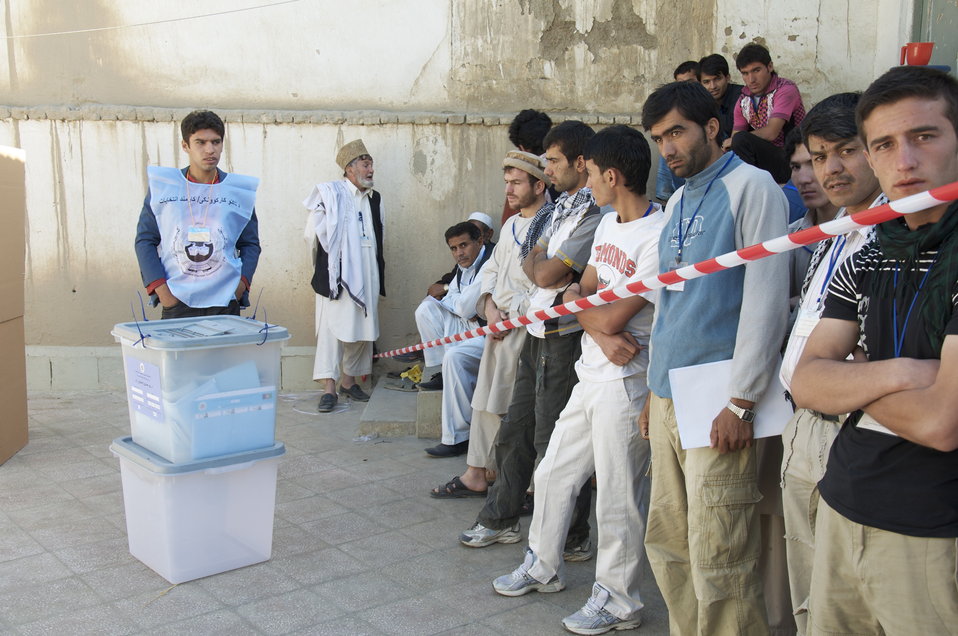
Residents Waiting to Vote